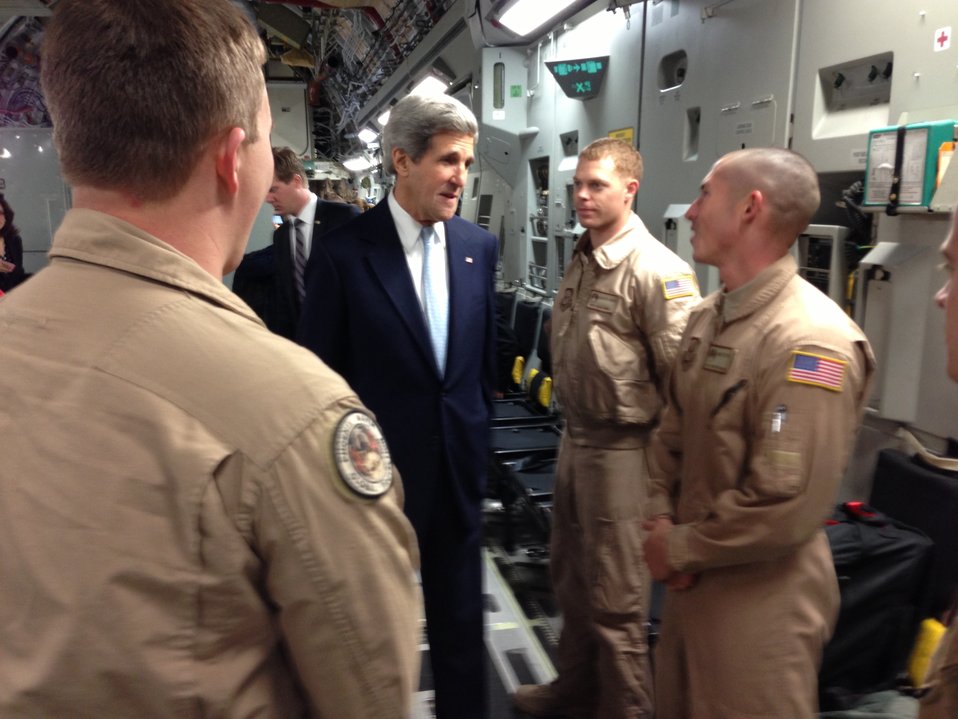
Secretary Kerry Greets His Flight Crew

U.S. Secretary of State John Kerry greets the flight crew that transported him to Baghdad, Iraq on March 24, 2013.